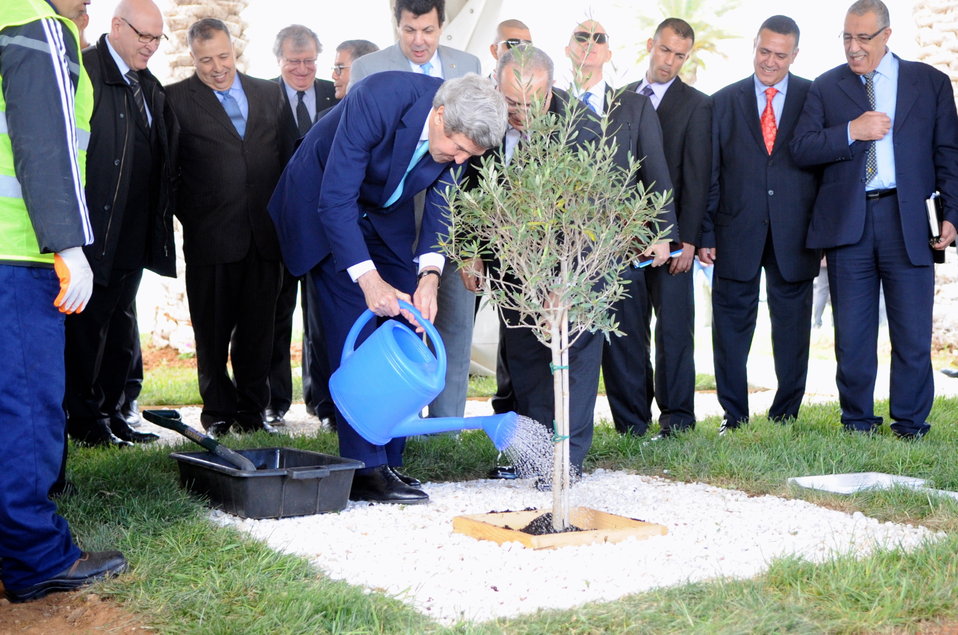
Secretary Kerry Waters Olive Tree Planted With Algerian Foreign Minister

U.S. Secretary of State John Kerry waters an olive tree he jointly planted with Algerian Foreign Minister Ramtane Lamamra outside the Ministry of Foreign Affairs after a Strategic Dialogue between their two countries in Algiers on April 3, 2014.